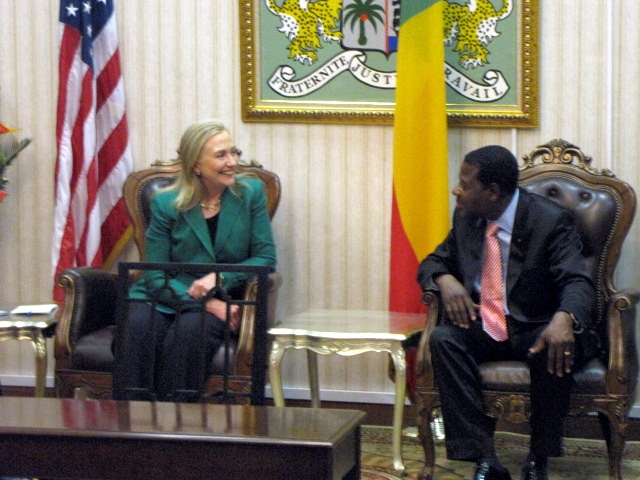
Secretary Clinton Meets With Benin's President Boni Yayi

U.S. Secretary of State Hillary Rodham Clinton meets with Benin's President Boni Yayi in Cotonou, Benin, on August 10, 2012.